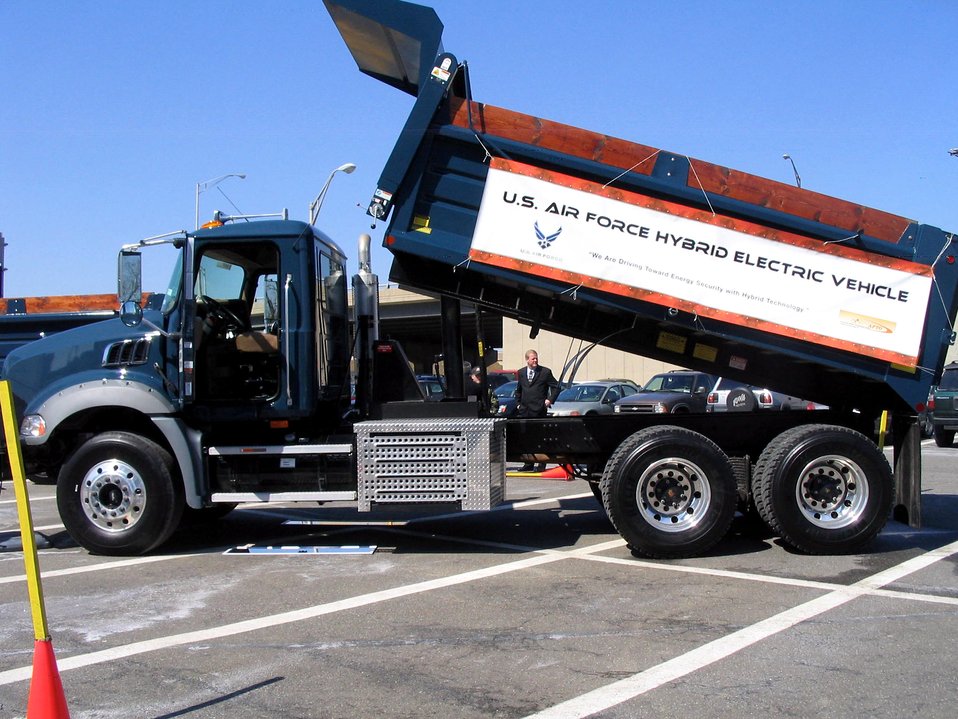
AFMC helps develop hybrid truck technology

Hybrid truck technology is in place at some Air Force installations thanks in part to the efforts of the Advanced Power Technology Office at Robins Air Force Base, Ga.